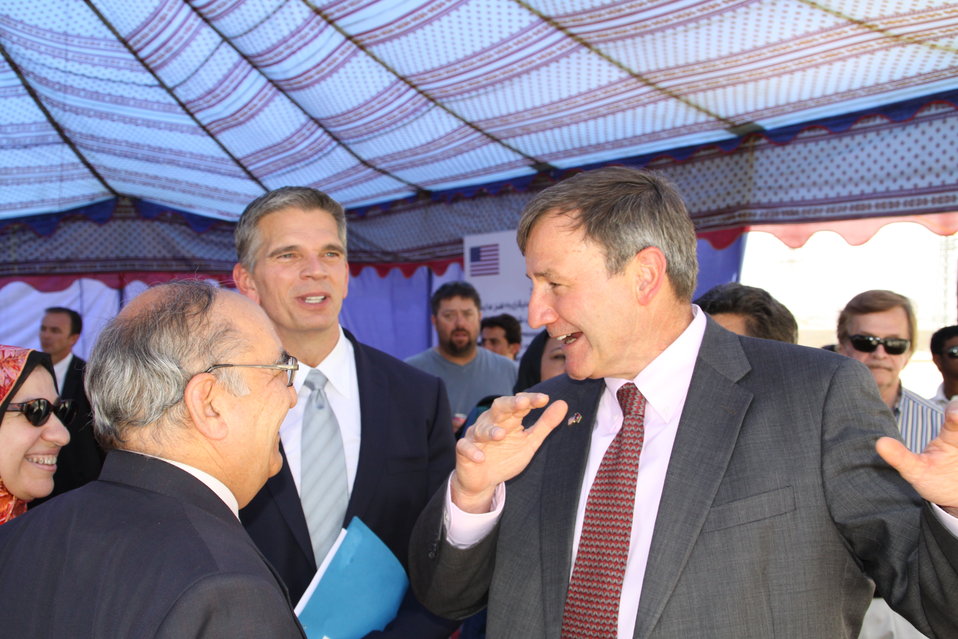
105 MW Tarakhil Power Plant Handover